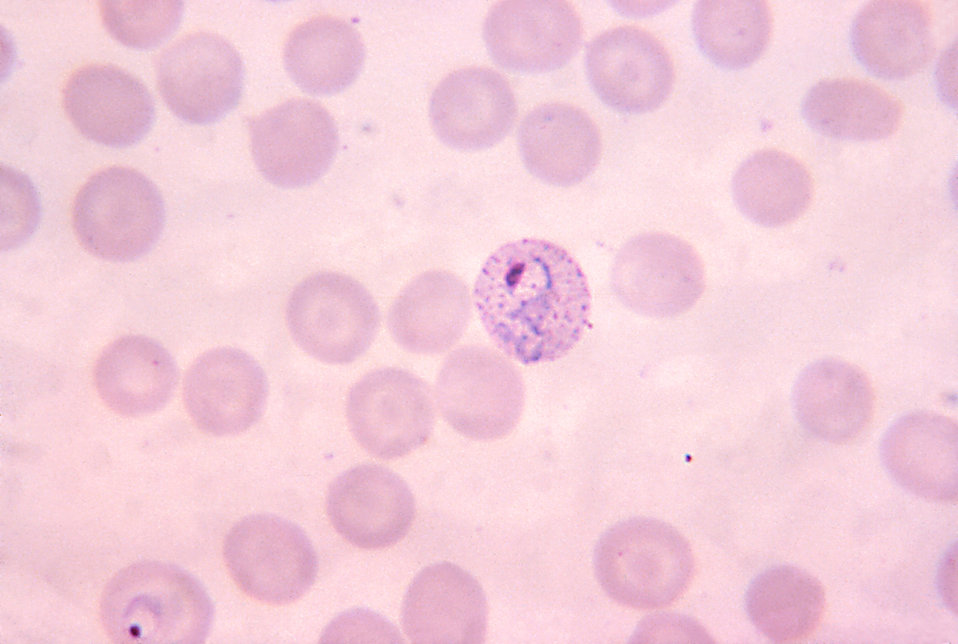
This photomicrograph shows a growing Plasmodium vivax trophozoite; Mag. 1250X.